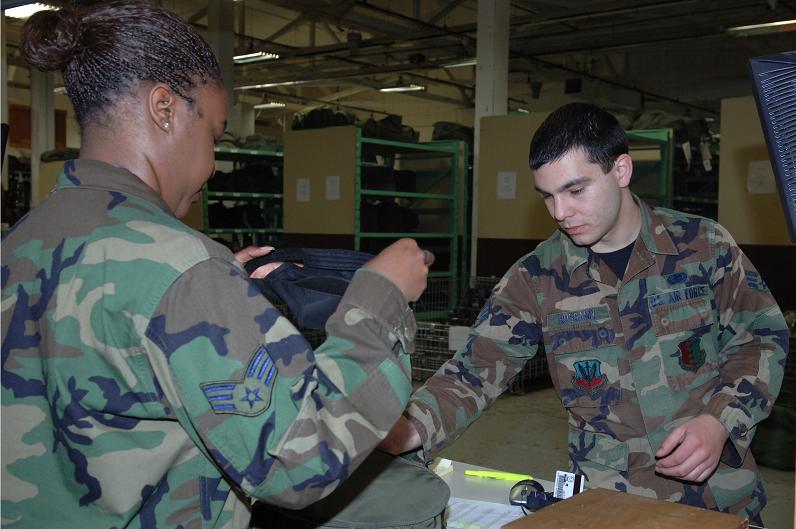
deployment to Southwest Asia from Ellsworth

Senior Airman Jaret Hussamy, 28th Logistics Readiness Squadron, issues a gas mask to SrA Tobiah Arvie, 28th Aircraft Maintenance Squadron prior to her deployment to Southwest Asia from Ellsworth Air Force Base, South Dakota, January 24, 2007.The 28th Bomb Wing is deploying troops to Southwest Asia in support of operations Iraqi Freedom and Enduring Freedom.